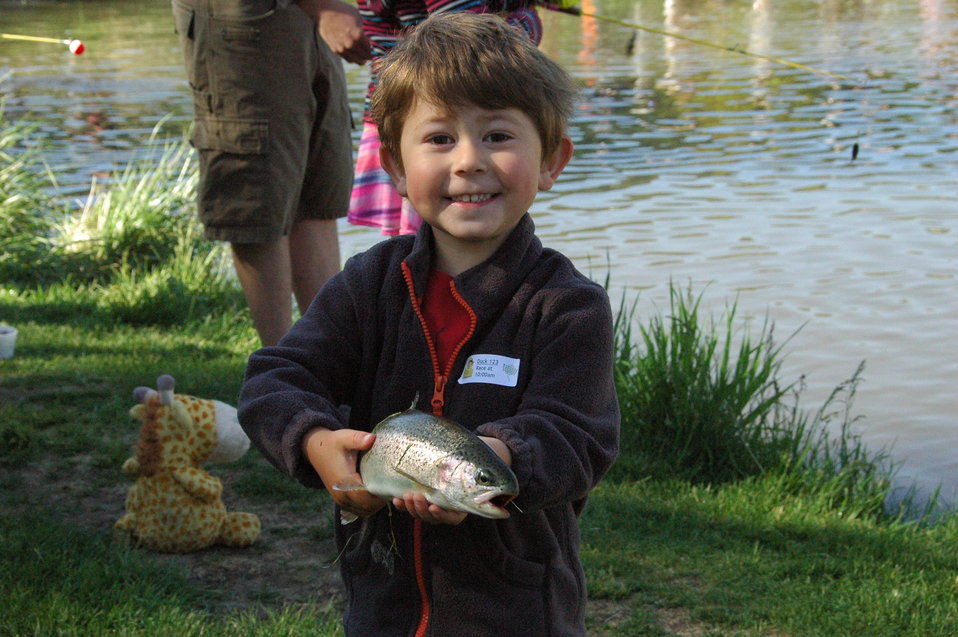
Happy Angler

It was a beautiful spring day in Montana June 7, 2014, when an estimated crowd of 2,000 attended the Welling Up for Watershed Festival & Fishing Derby. Each year the event is held in conjunction with the Watershed Festival, which is organized by the Montana Outdoor Science School. Based on the number of rainbow trout caught, cleaned, and bagged, approximately 600 kids took part in the pond derby. The derby was highly successful thanks to Bozeman Fish Technology Center, Aquatic Animal Drug Approval Partnership, and Montana Fish & Wildlife Conservation Office staffers and volunteers. Many of the parents and children in attendance praised the event and expressed gratitude for the volunteers and organizations involved. One exuberant mother of two boys exclaimed: 'this event is a great example of what Bozeman is all about!' The largest fish caught weighed 7.5 pounds.